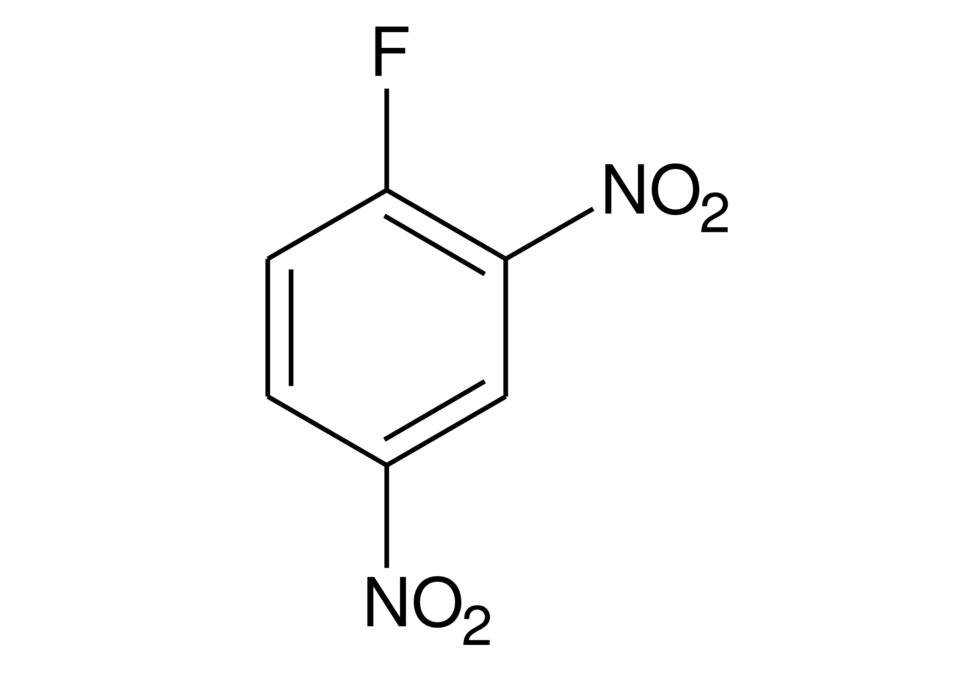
Italiano: Formula di struttura dell'1-fluoro-2,4-dinitrobenzene